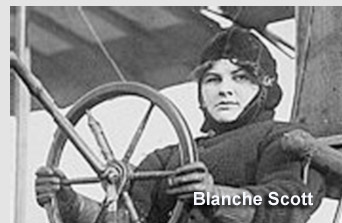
Blanche Scott

The first American woman pilot, Blanche Stuart